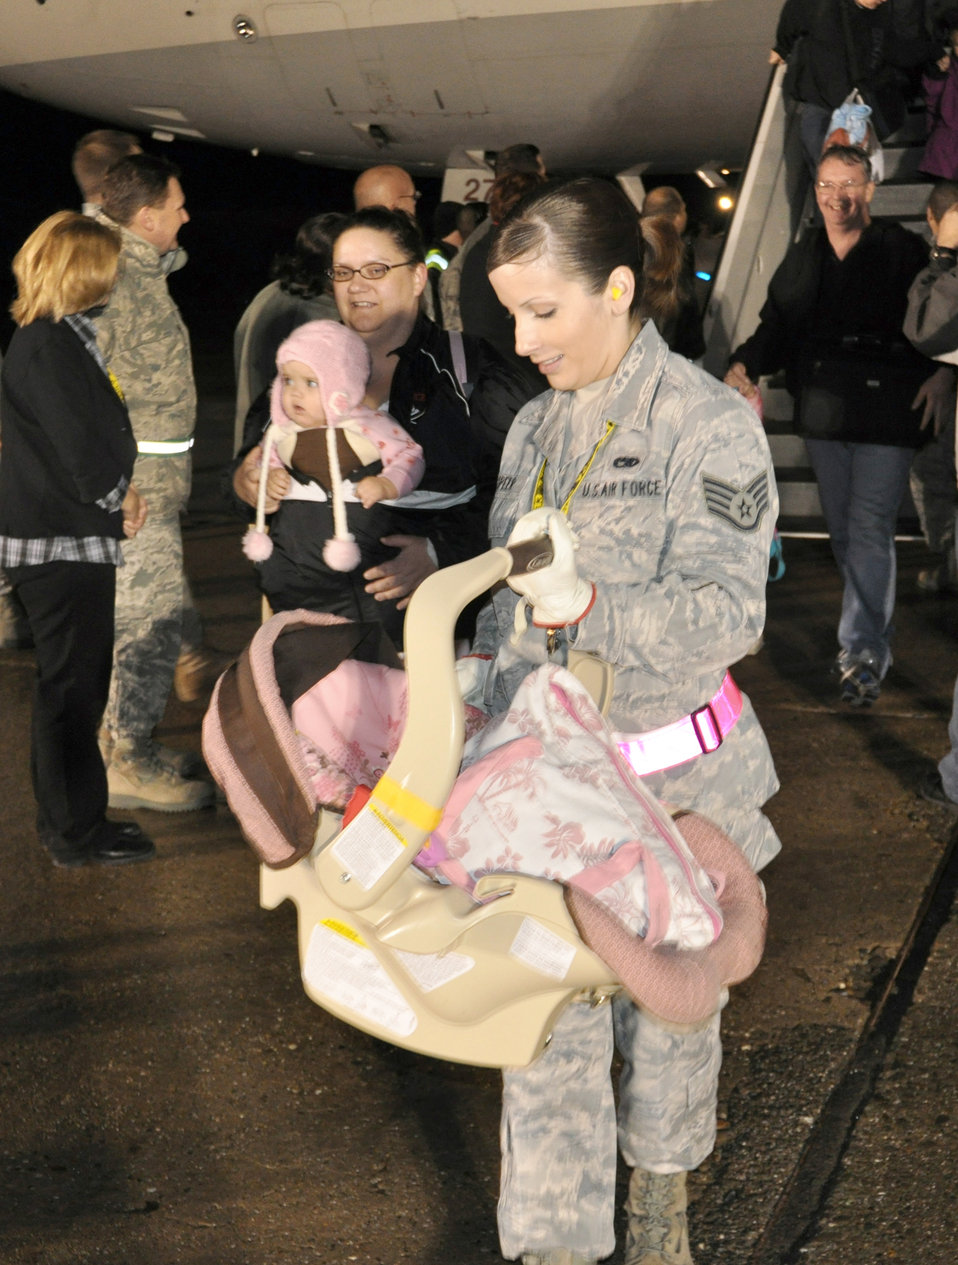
Members voluntarily leave Japan in support of Operation Pacific Passage

Staff Sgt. Katie Speer carries a child off a military-chartered flight March 22, 2011, at Travis Air Force Base, Calif. Approximately 500 passengers arrived at Travis AFB in support of Operation Pacific Passage. On March 17, 2011, the Office of the Secretary of Defense approved voluntary assisted departures to the United States for family members residing in Japan. These flights will continue for the foreseeable future to accommodate the needs of our service member's families. Sergeant Speer is the 60th Air Mobility Wing command chief executive.